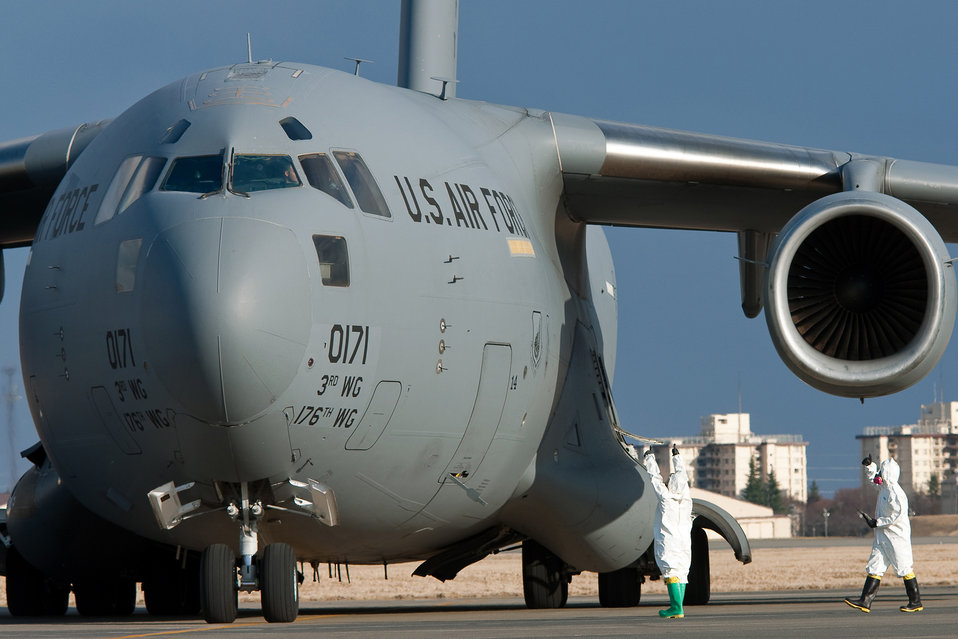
C-17 transports Japanese forces to help relief efforts

Senior Airman Eva Gaus (left) and Senior Airman Jonathan Jones (right) indicate